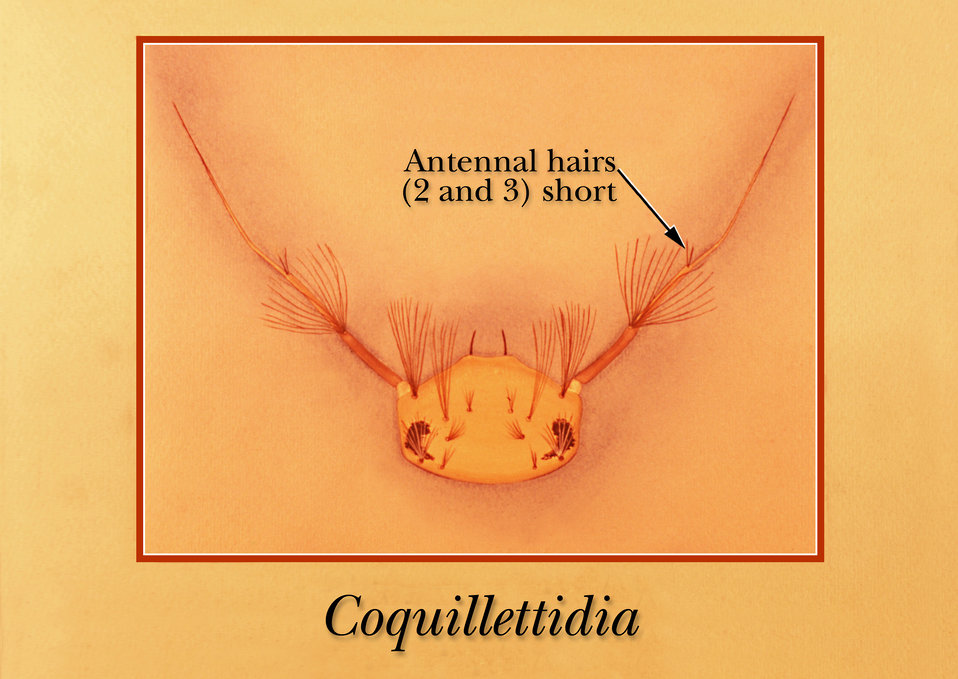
Drawing identifying the antennal structures on the head region of a Coquillettidia mosquito larva.